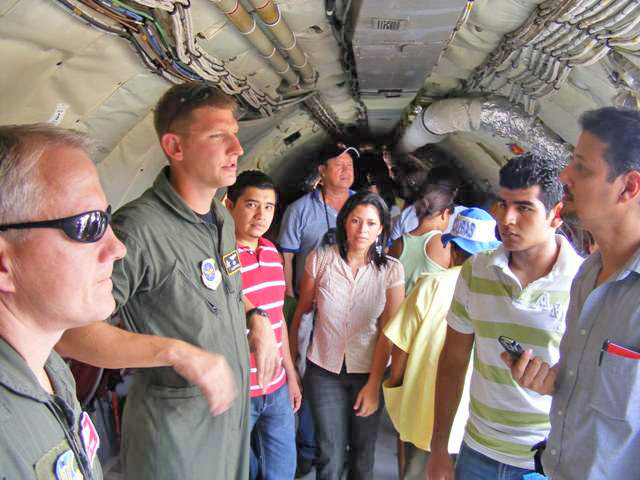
Honduras airshow aids local hospital

Capt. Isaiah Oppelaar gives a tour of the KC-135 Stratotanker during an air show June 21 at San Pedro Sula, Honduras. More than 30 Airmen participated at the international airshow. Captain Oppelaar is a pilot deployed from MacDill Air Force Base, Fla.